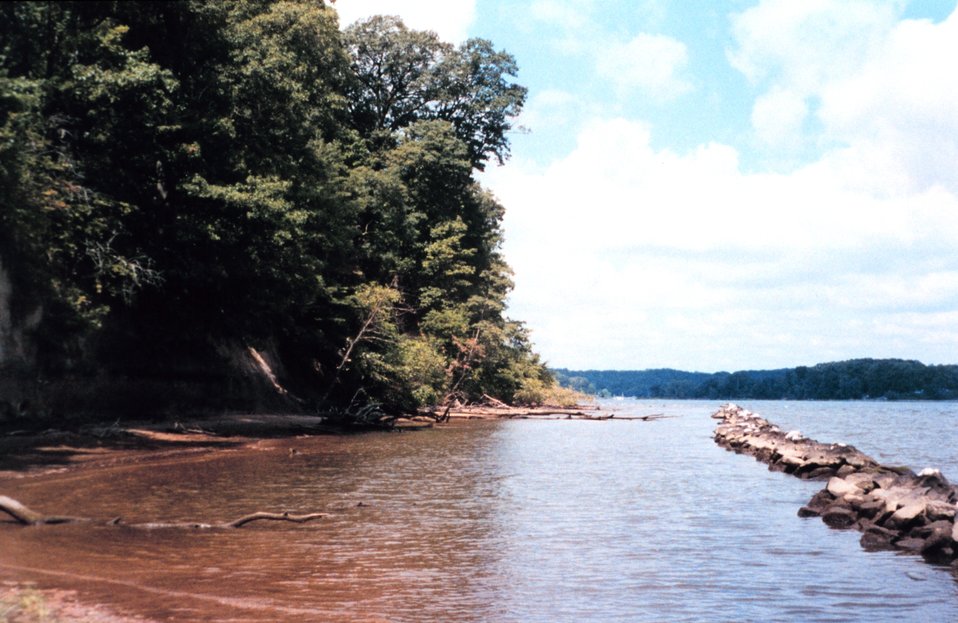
Efforts to preserve shoreline along the Severn River include installation of segmented jetties to diffuse wave energy.